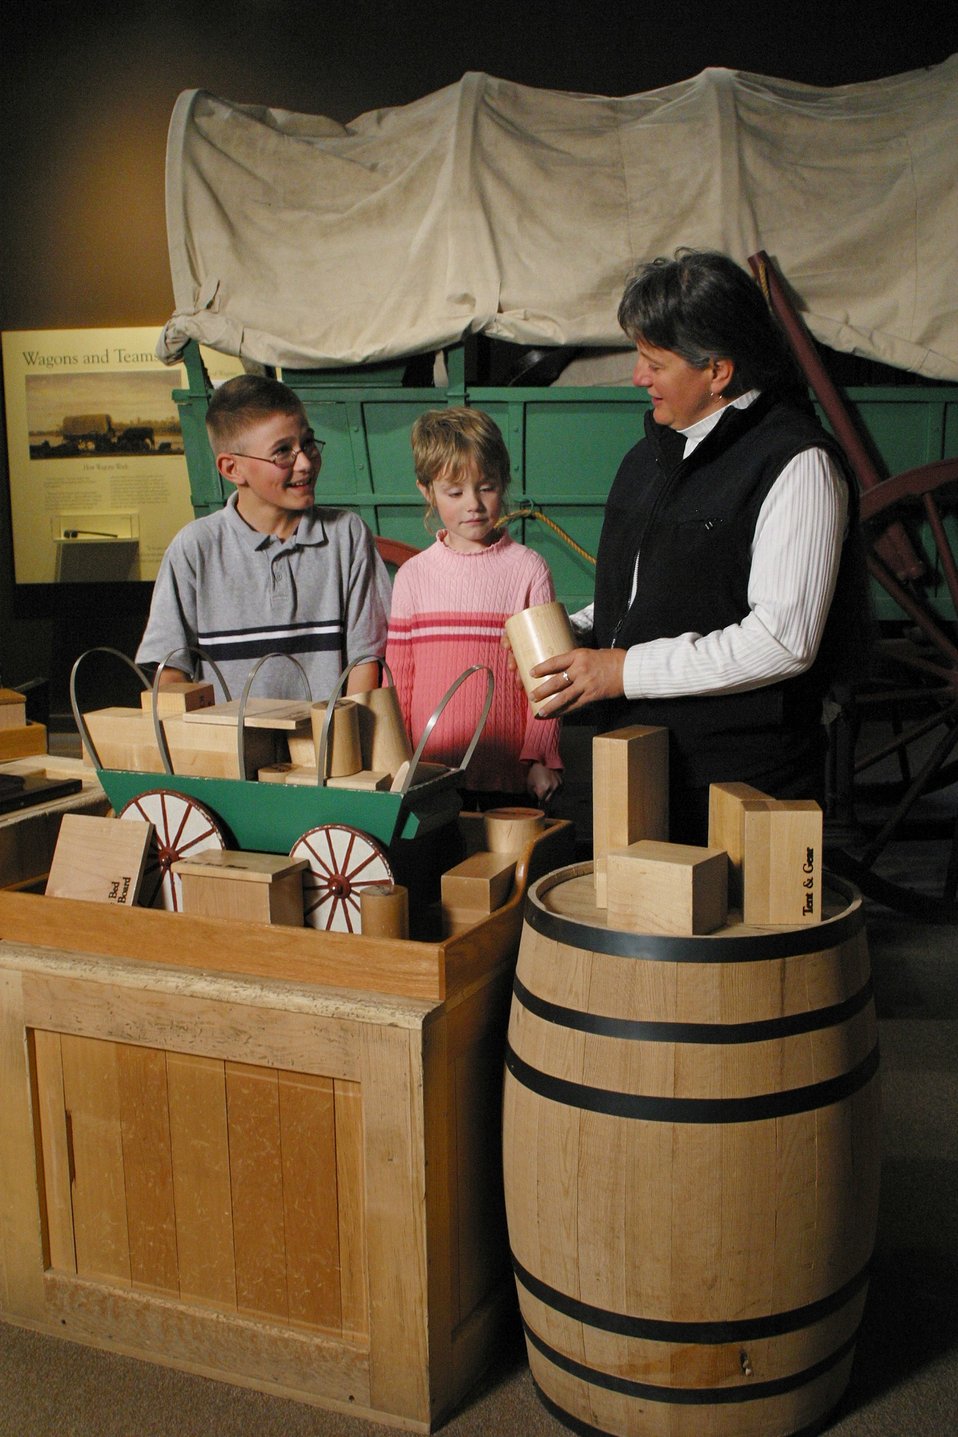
Visitors can use the interactive display to decide what to put into their wagon before leaving on their Oregon Trail journey.